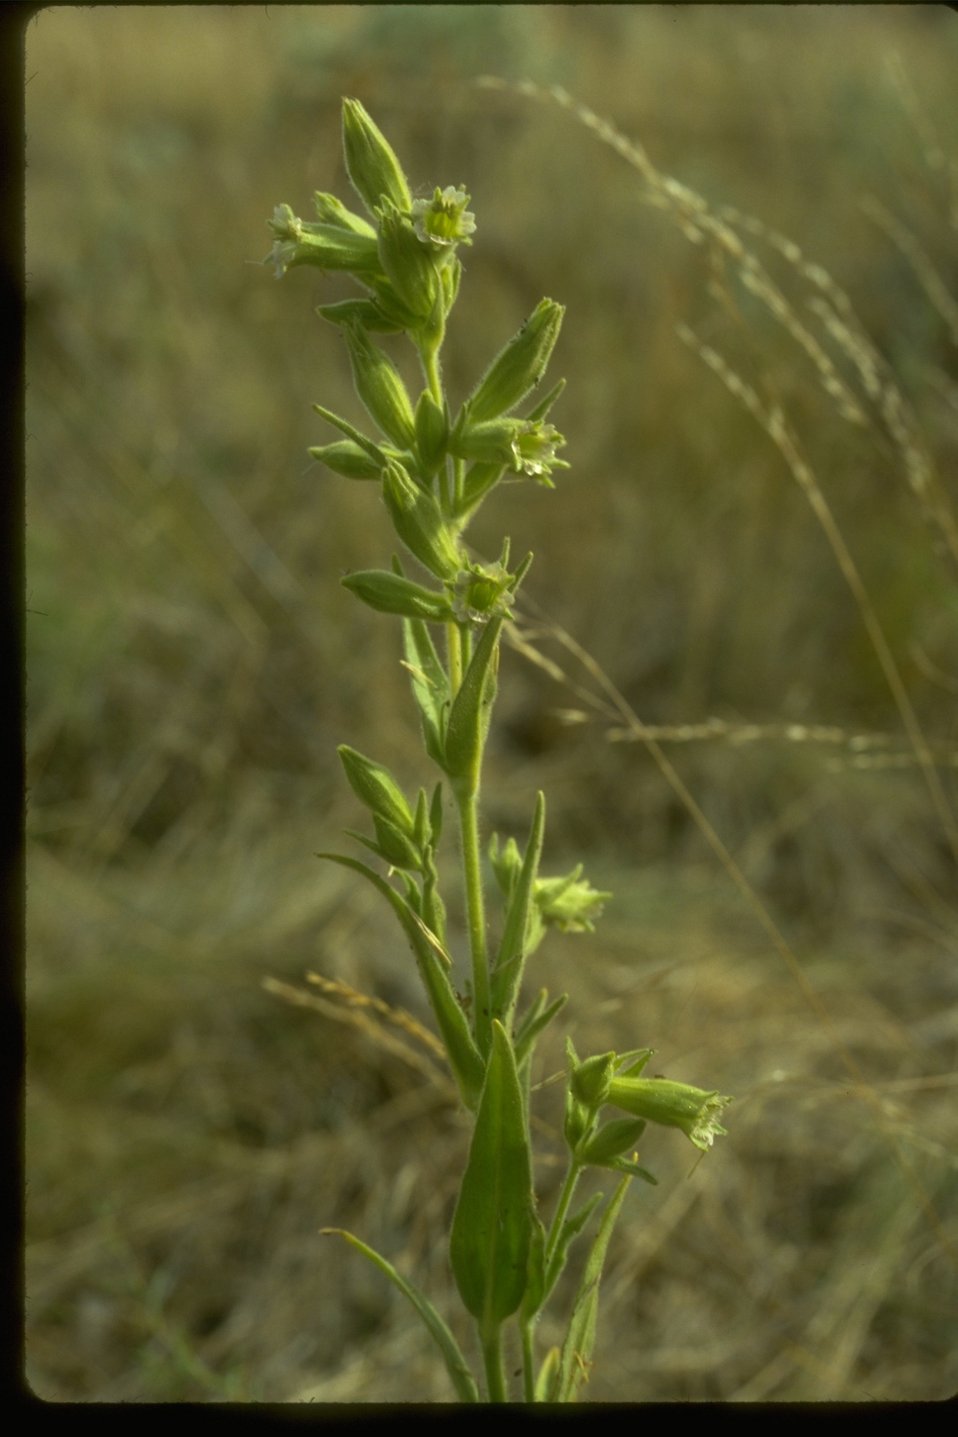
Silene spaldingii, a State-classified endangered plant found in Lincoln County, Washington.